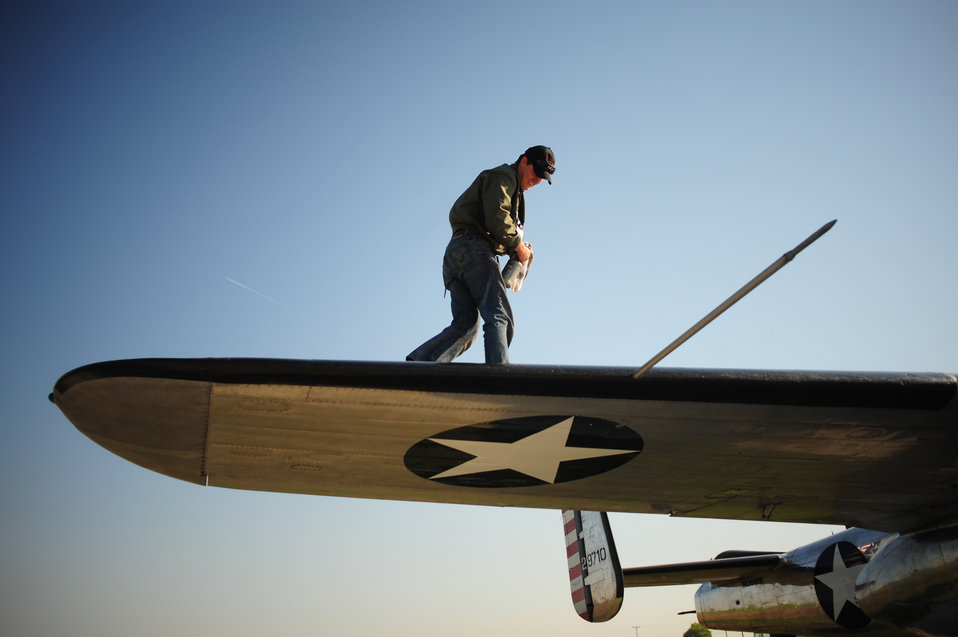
68th Doolittle Raiders Reunion

Ricky Bradley, a volunteer crew chief, inspects the wing of the